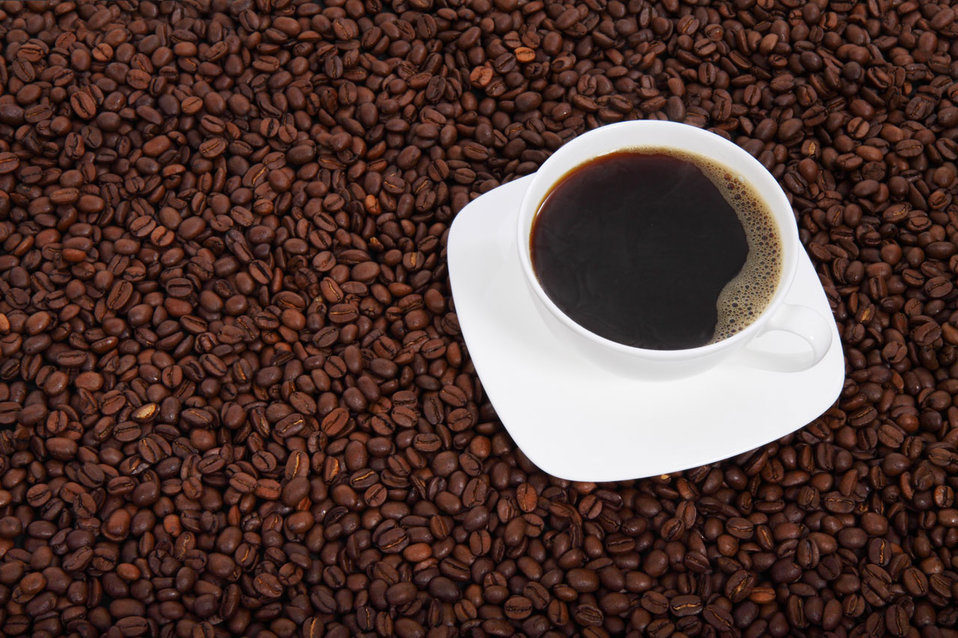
Cup of coffee with beans

Cup of coffee surrounded with coffee beans.